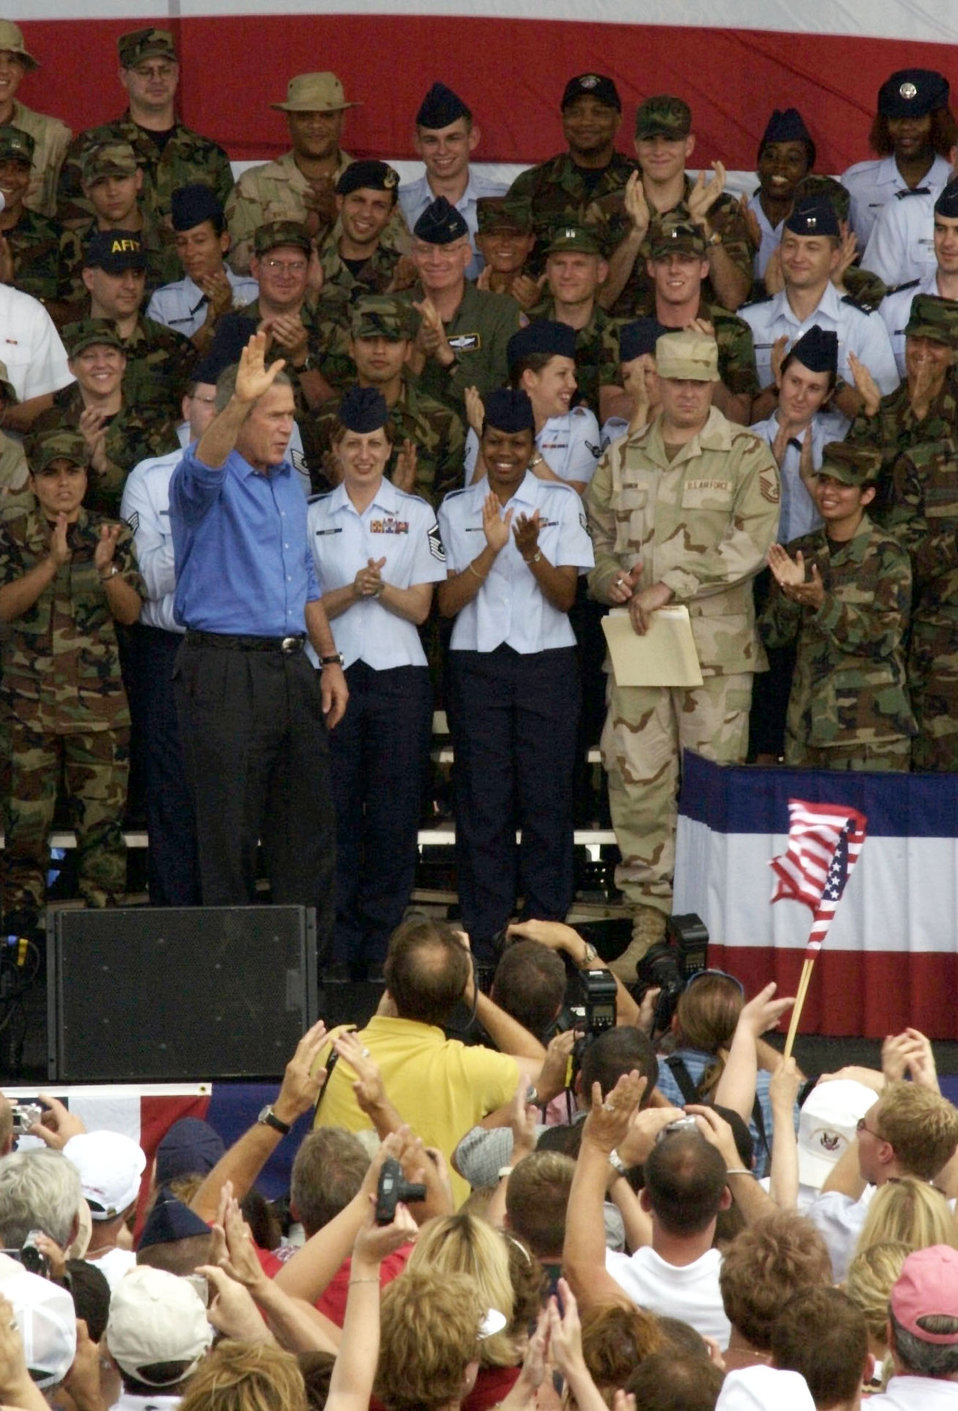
Welcome Mr. President

WRIGHT-PATTERSON AIR FORCE BASE, Ohio -- President George W. Bush greets approximately 20,000 people here July 4. During his address, Bush said